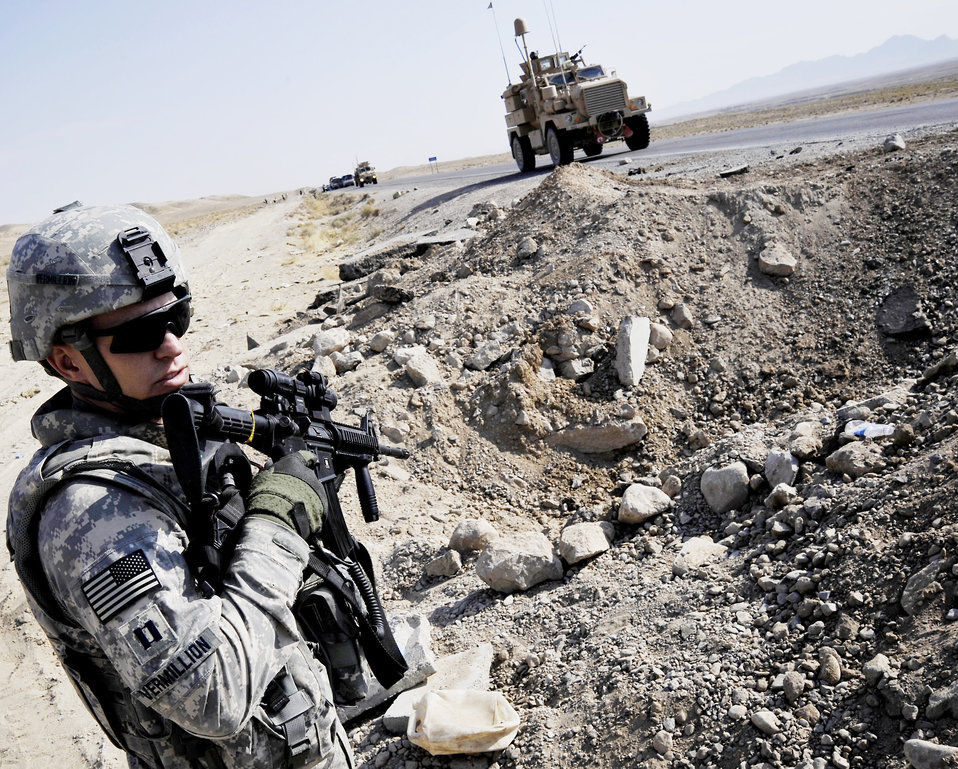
Air Force engineers help keep Afghan roads safe for travel

Capt. Rick Vermillion inspects a bridges for improvised explosives devices, damages or traces of tampering Oct. 23, 2009, in Zabul Province, Afghanistan. The inspections provide safety to the people of Zabul as well as coalition forces while traveling. Captain Vermillion is an engineer assigned to Provincial Reconstruction Team Zabul.